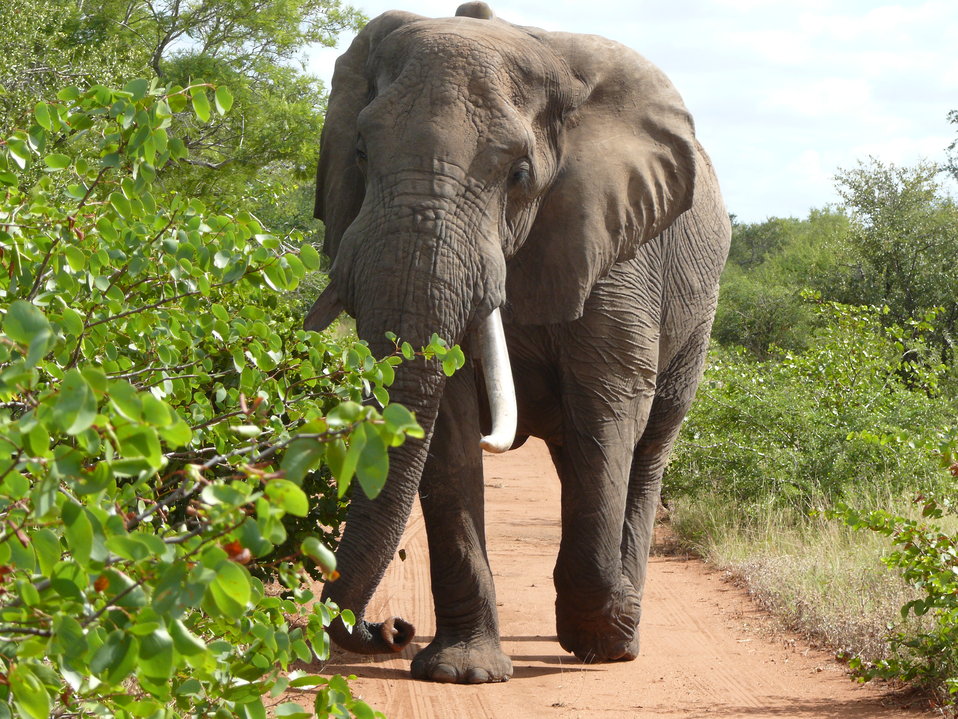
Classic

'Classic' is one of the oldest and most dominant bulls in the western Kruger ecosystem, South Africa. Michelle Gadd/USFWS